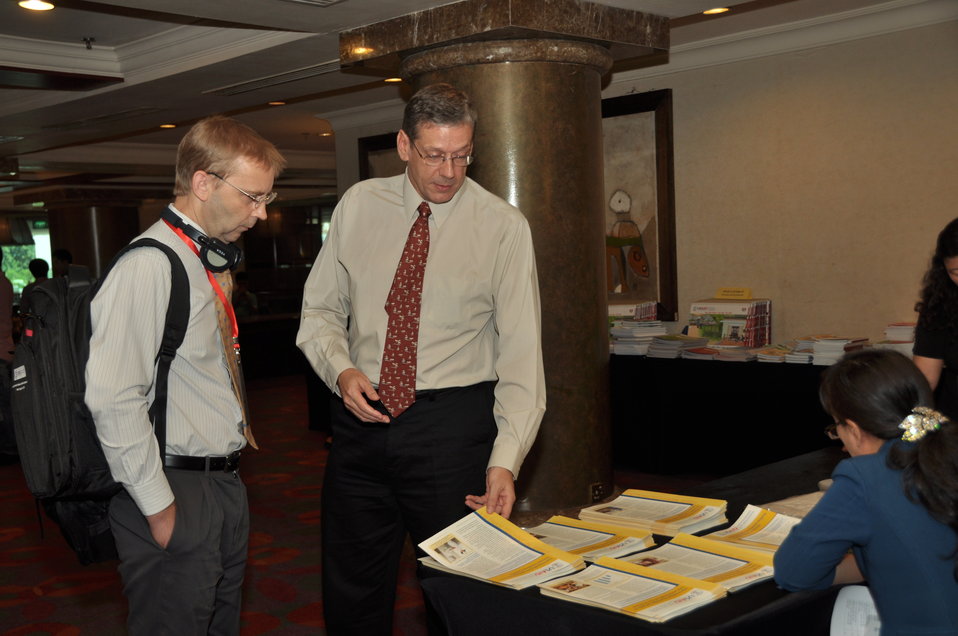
USAID Avian and Pandemic Influenza Initiative Dissemination Workshop

Dissemination Workshop
Hanoi, August 6, 2013.